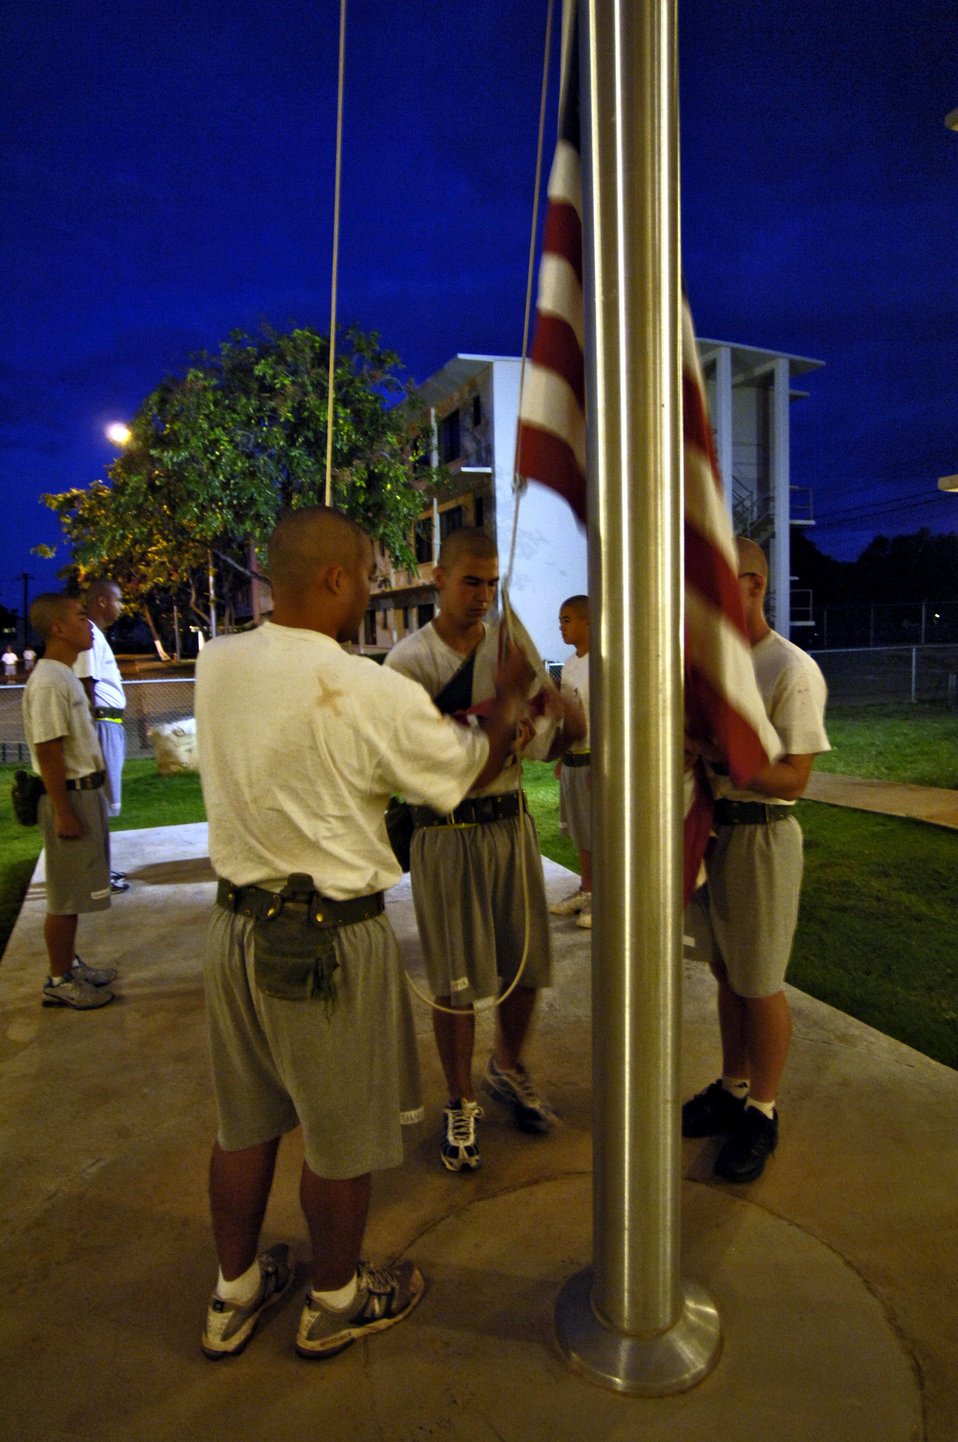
National Guard program helps at-risk teens

Cadets raise the flag at the Hawaii National Guard Youth Challenge Academy in Kapolei, Hawaii, on Thursday, May 18, 2006. The academy staff teach life skills to non-traditional students so they can be successful in the community and earn a high school diploma.